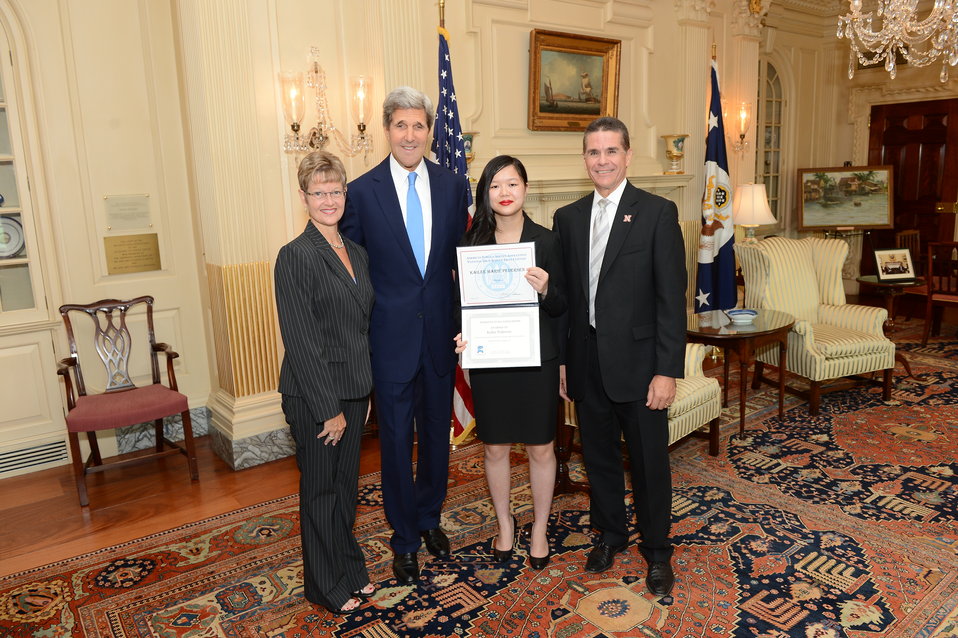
Secretary Kerry Kerry Meets With AFSA Essay Contest Winner, Kailee Pedersen

U.S. Secretary of State John Kerry meets with the winner of the American Foreign Service Association (AFSA) essay contest, Kailee Pedersen, at the U.S. Department of State in Washington, D.C., on August 8, 2013.